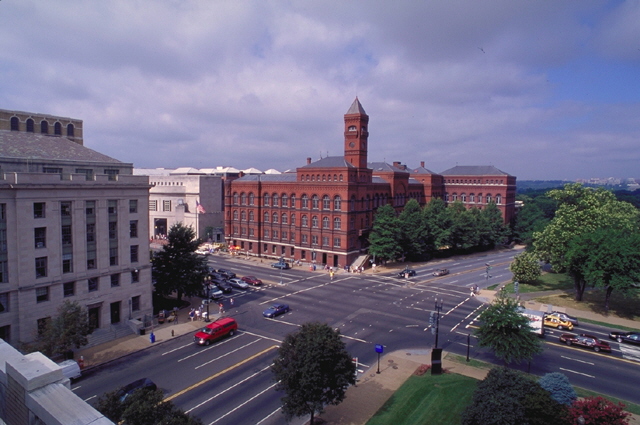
Smokey Yates

The U. S. Department of Agriculture (USDA), Forest Service (FS) Information Center is housed in the Sidney Yates Building near the Washington Monument in Washington, D.C. The center is patterned after the Rudy Wendelin painting “Smokey’s Fan Mail.” Wendelin, who lived in Arlington, VA, also designed the 1984 Smokey Bear postage stamp and the 1948 Forest Conservation stamp.